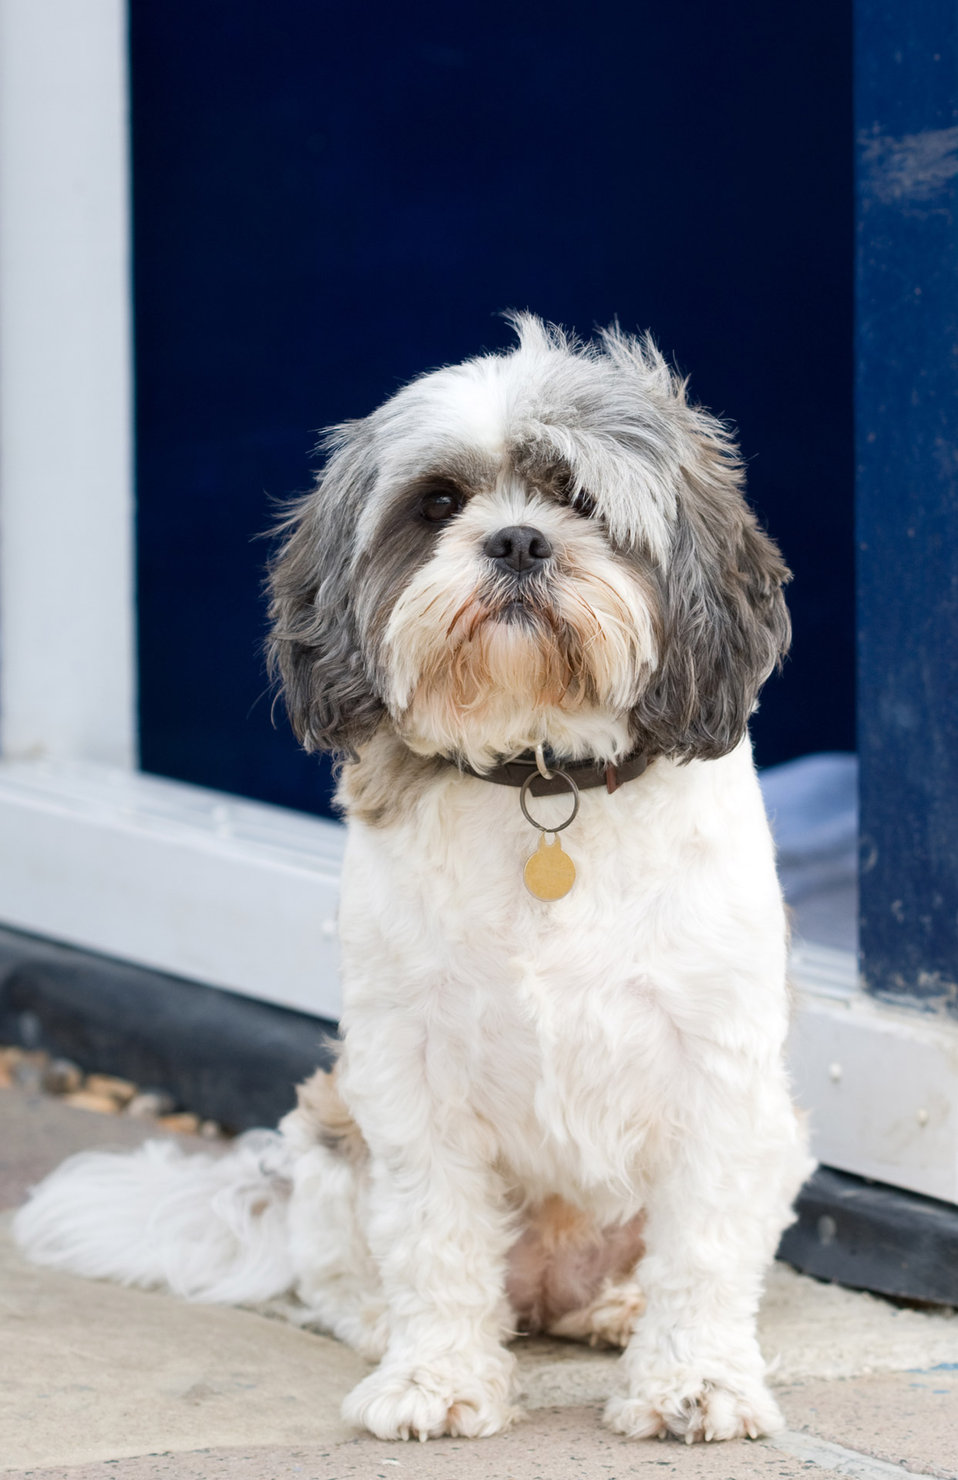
Cute dog

Cute little shih tzu dog in close-up.